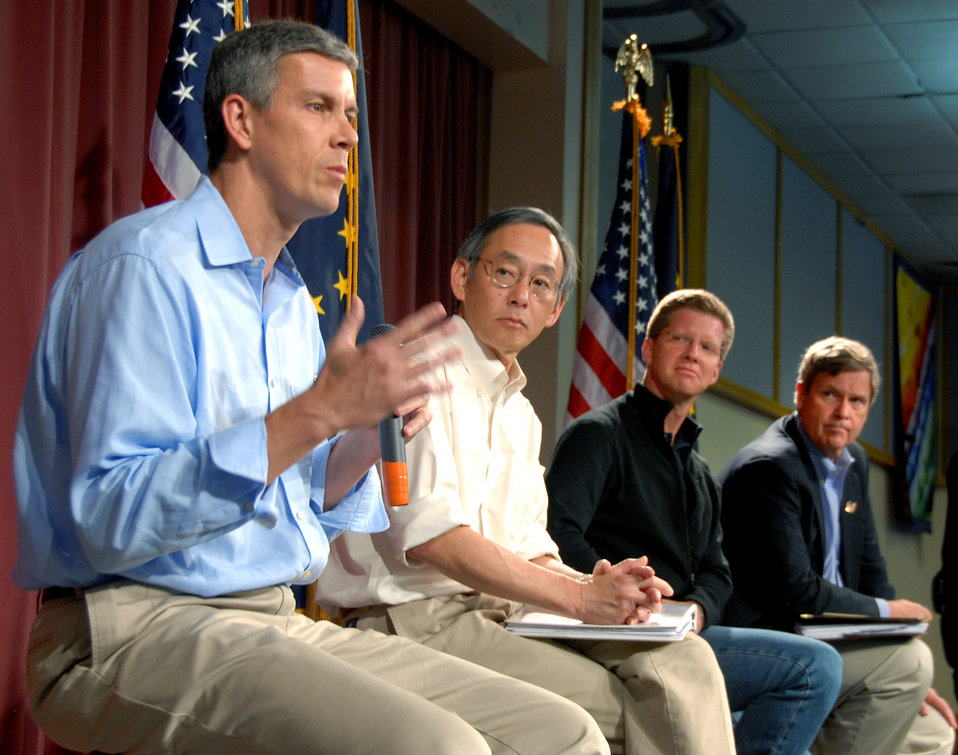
Rural Tour 0136

Rural Tour Alaska Aug 2009